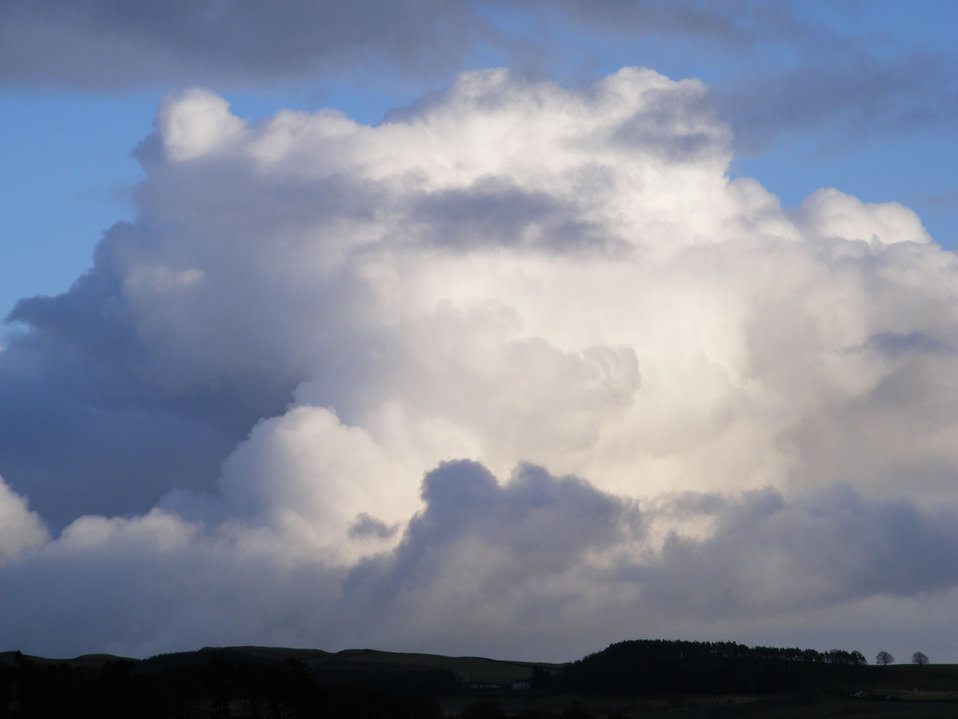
Clouds

Cloud formation south west scotland.